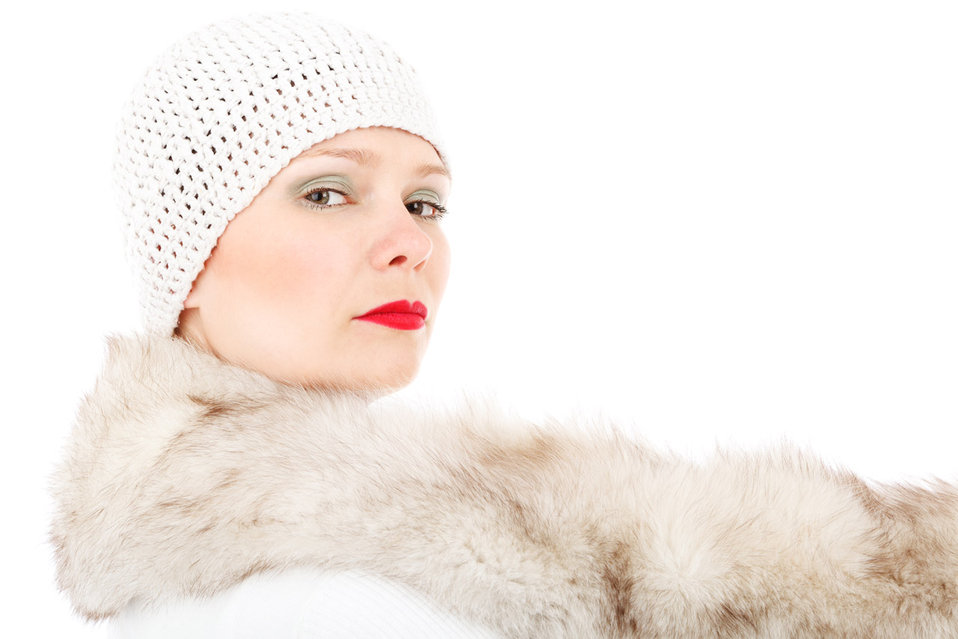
Fashion winter lady

Sensual young lady in seasonal winter clothes isolated on white background.